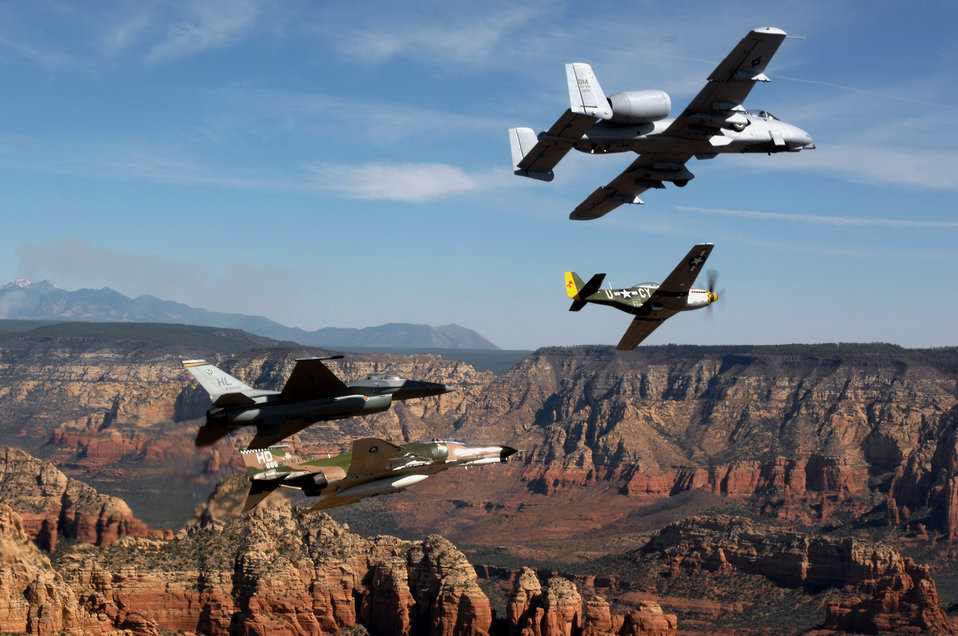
Planes of past and present soar over Sedona

An Air Force heritage flight consisting of a P-51 Mustang, an F-4 Phantom, an A-10 Thunderbolt and an F-16 Fighting Falcon fly over the Arizona desert on March 19 above Sadona. The flight was part of the events taking place in Phoenix for the first Air Force Week celebration of the year.